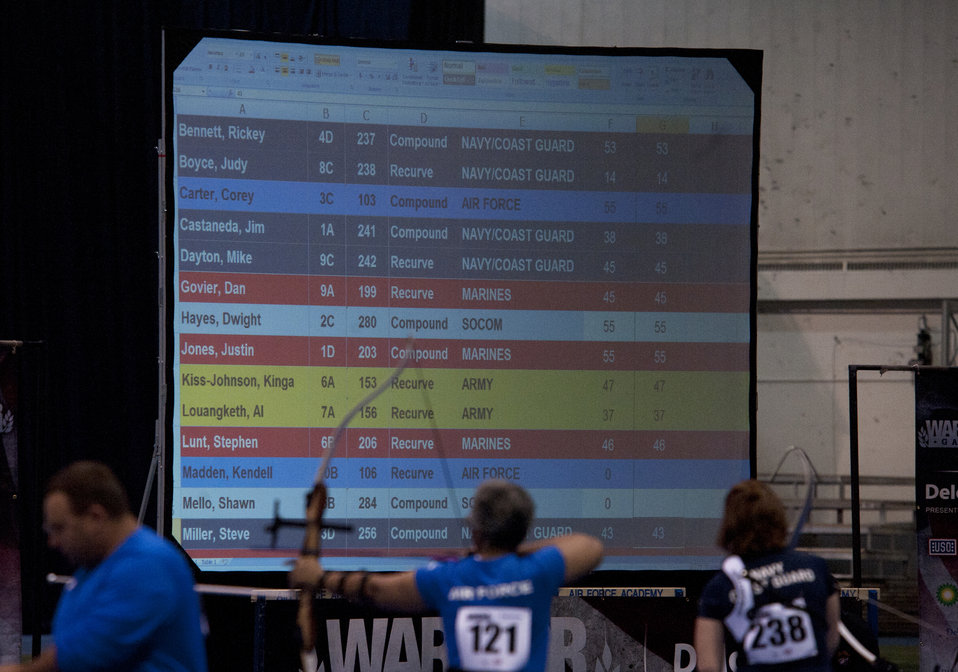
Warrior Games

Gwen Sheppard, foreground center, aims her bow at her target with the scoreboard in the background during the archery competition of Warrior Games 2012 at the U.S. Air Force Academy in Colorado Springs, Colo., May 2, 2012. Sheppard is with the Air Force team.